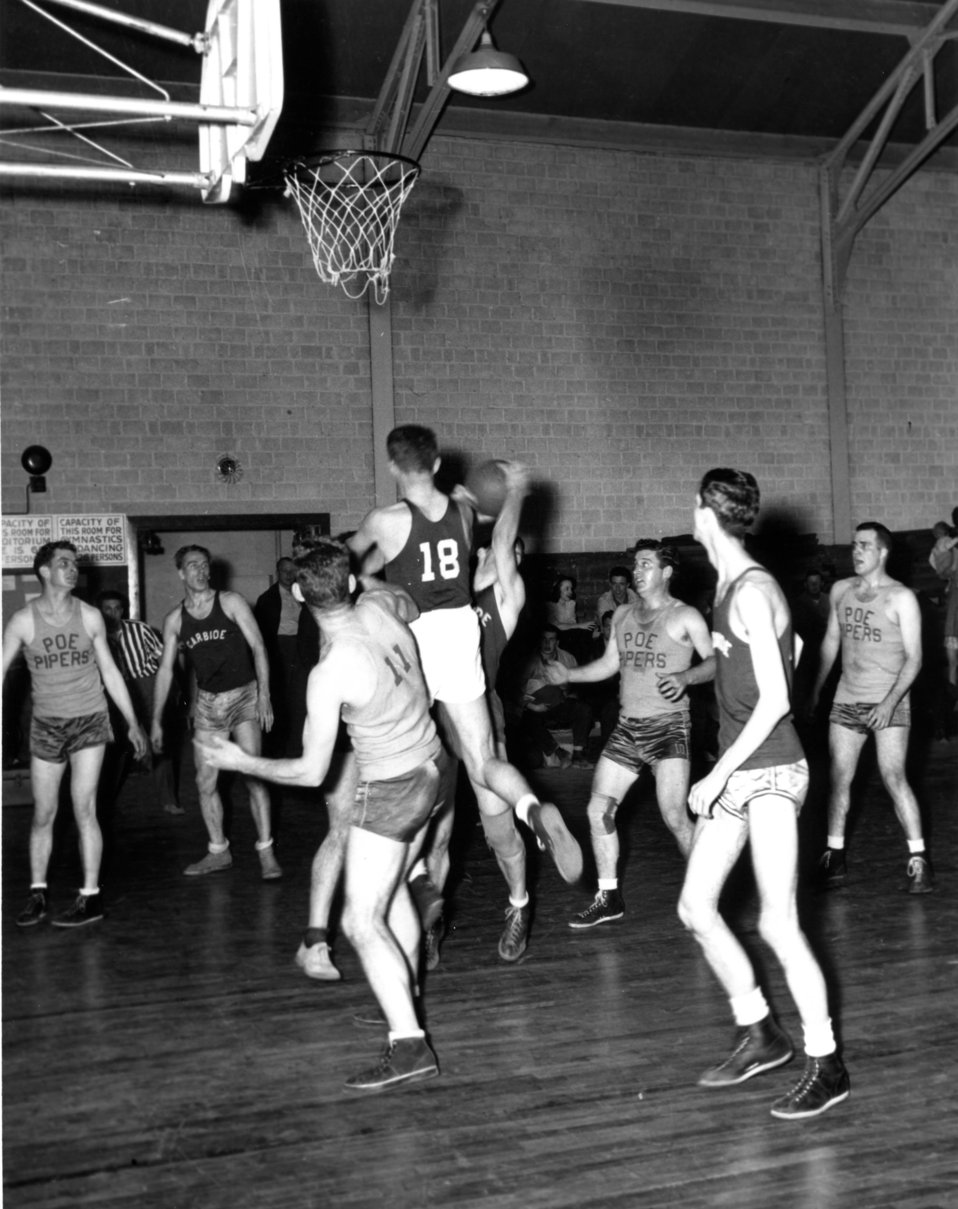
Recreation at Oak Ridge